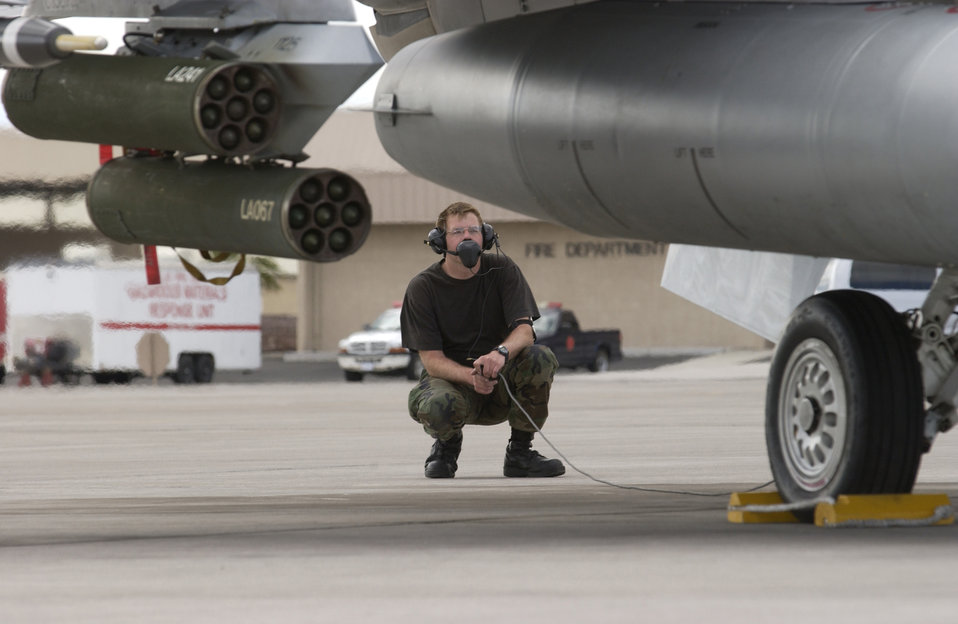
Air Warriors fly high

NELLIS AIR FORCE BASE, Nev. -- Senior Airman Kevin Hilsinger inspects an F-16 Fighting Falcon before a mission here. He is assigned to the 354th Aircraft Maintenance Squadron at Eielson Air Force Base, Alaska. Airmen from Eielson are here to participate in Air Warrior, an air-to-ground exercise which provides close-air support to Soldiers training at the U.S. Army National Training Center at Fort Irwin, Calif.